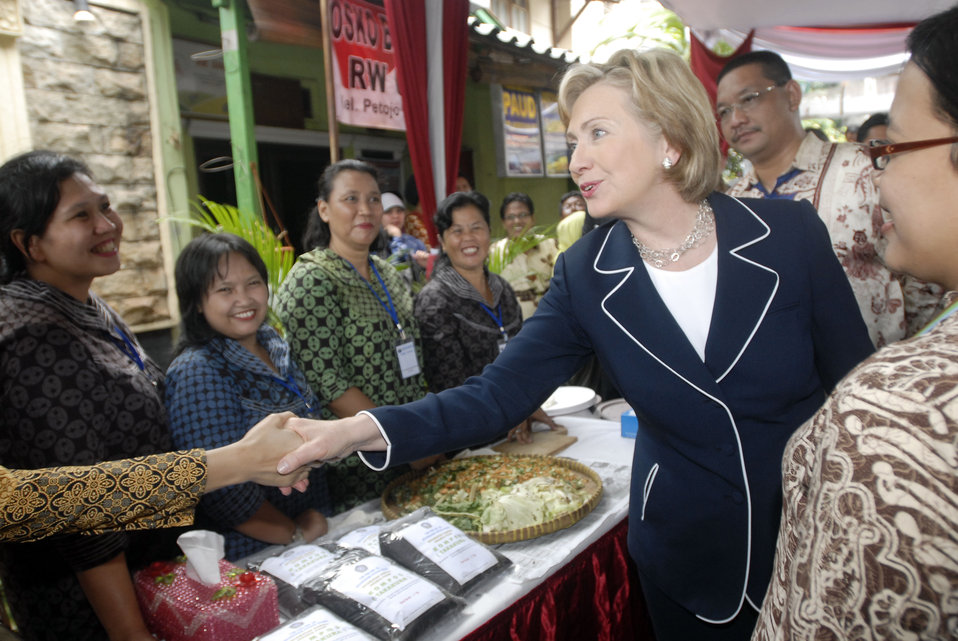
Secretary Clinton Greets Business Women in Jakarta

Secretary Clinton greets local business women in the Petojo Utara neighborhood of Jakarta, Indonesia February 19, 2009.